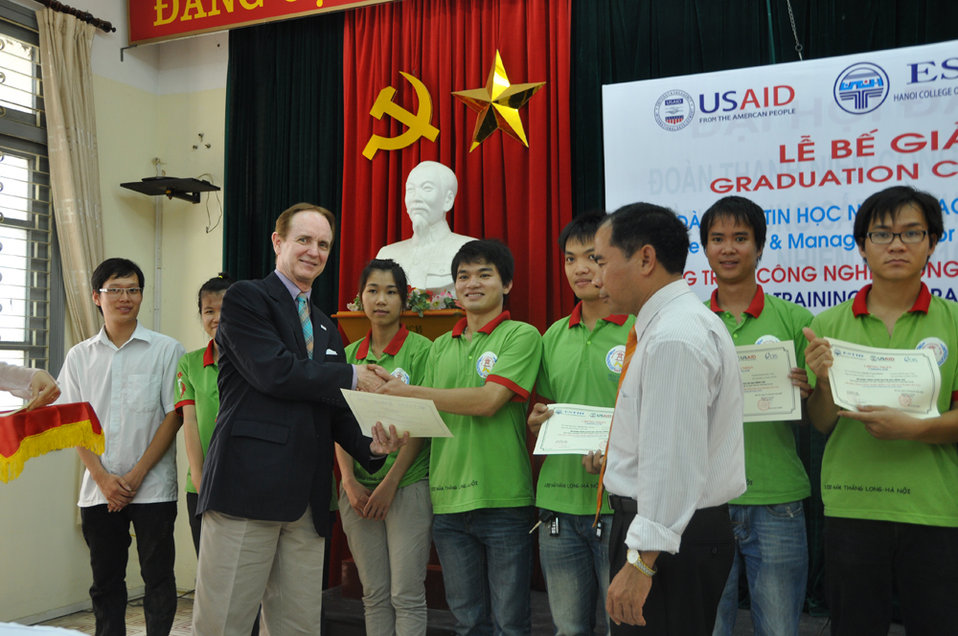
USAID Mission Director Francis Donovan participate in graduation of IT students in Hanoi on June 22, 2011.